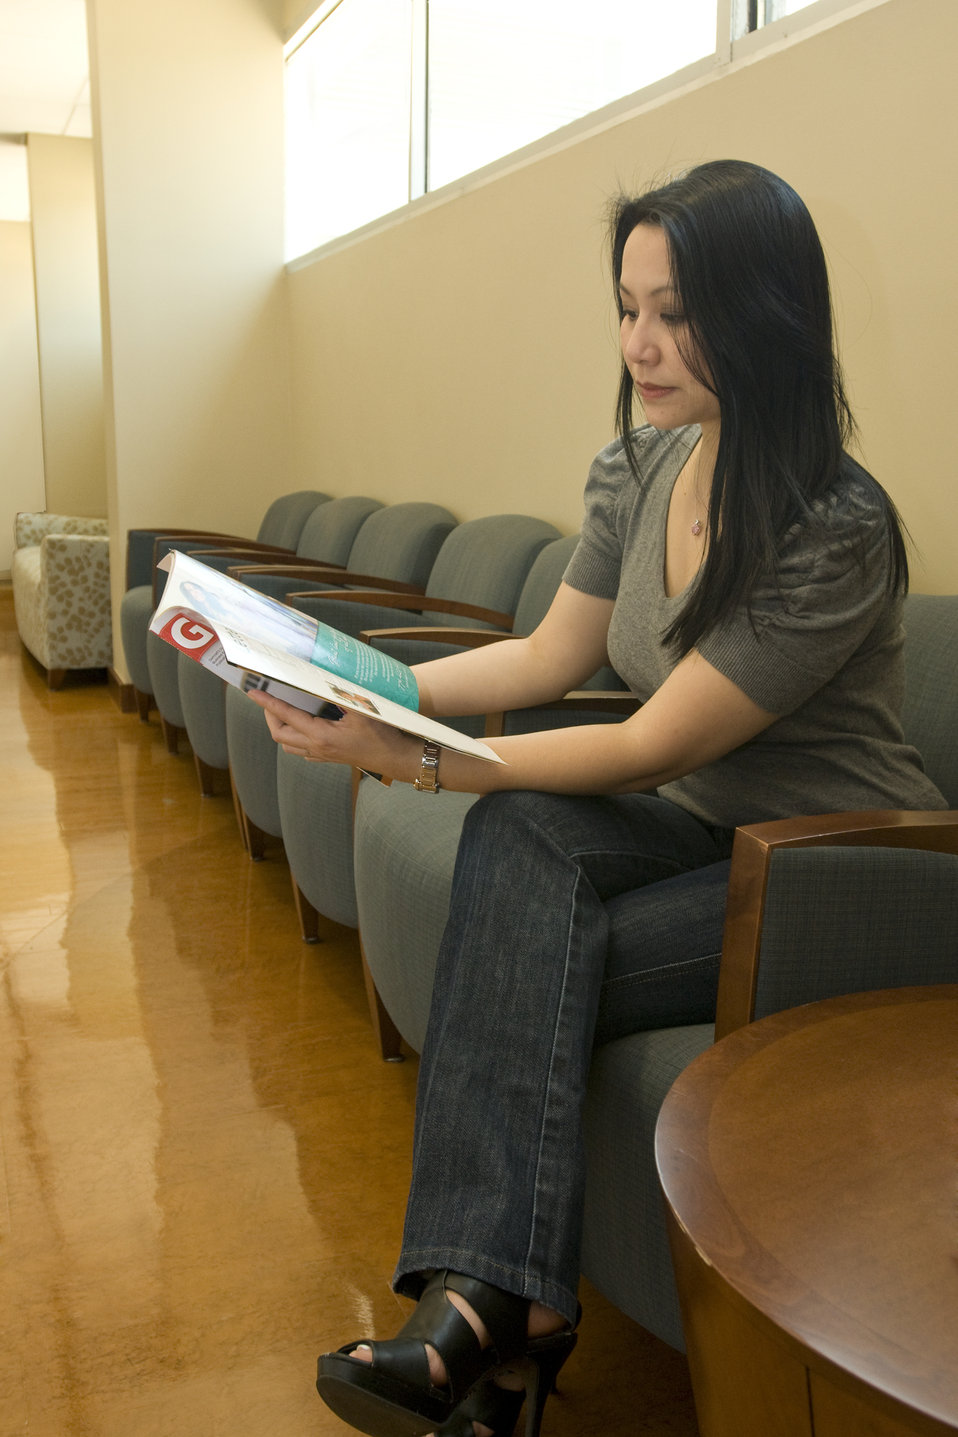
This woman was seated in a medical facility waiting to be called in to an examination room in order to be seen by a healthcare provider. It is unknown as to why she had come to this clinic. While waiting, she was reading a magazine to pass the time.